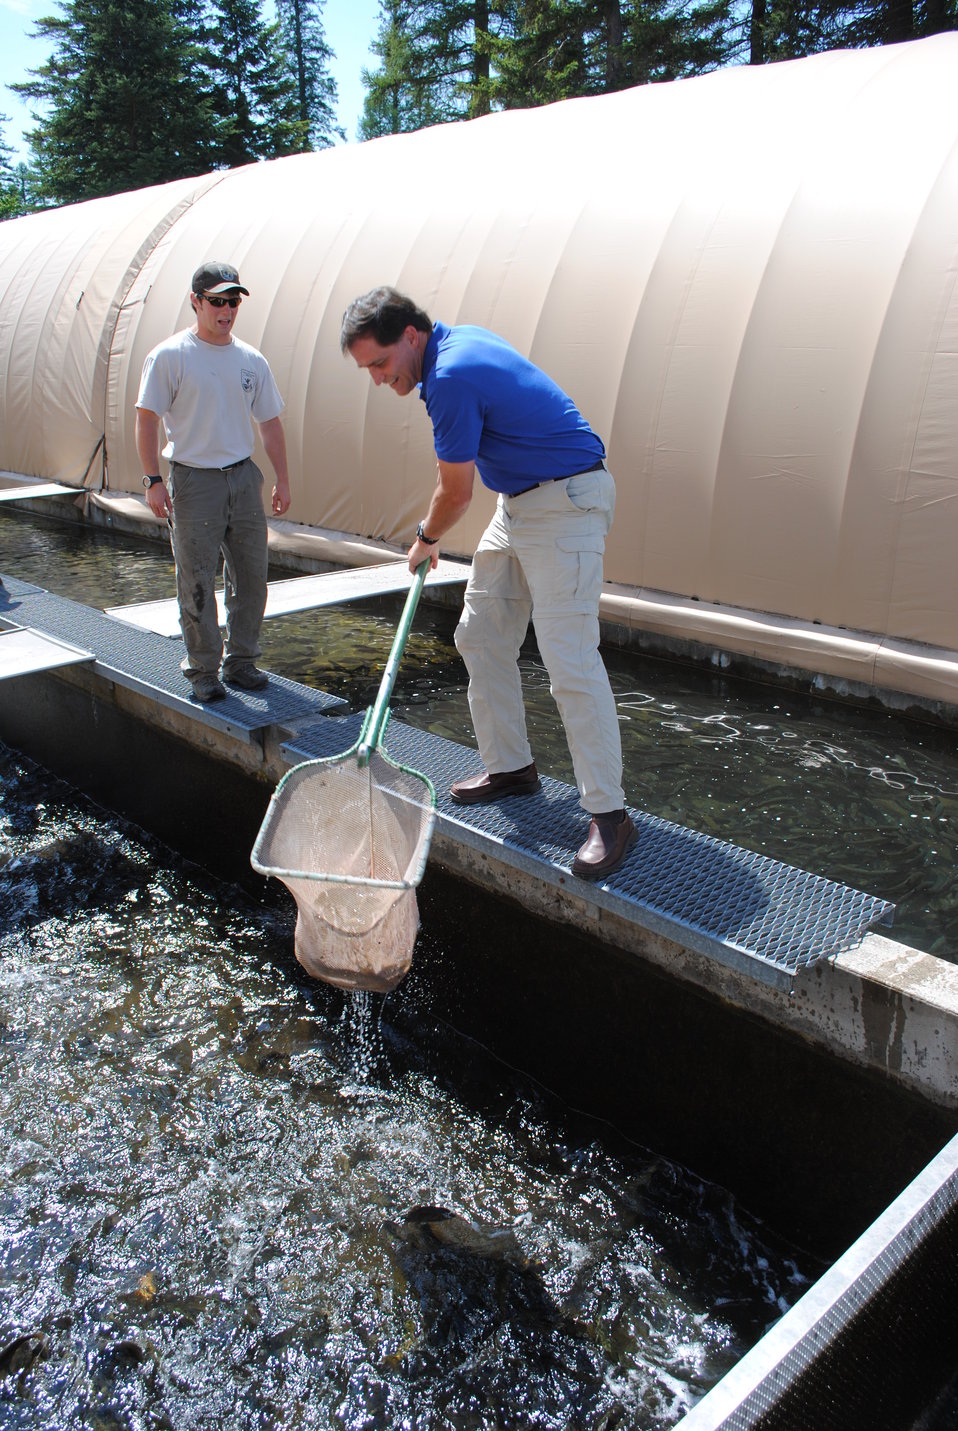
Director Ashe Catches Several Rainbow Trout

Director Dan Ashe catches rainbow trout in his net to be transported and stocked from Creston National Fish Hatchery in Montana.